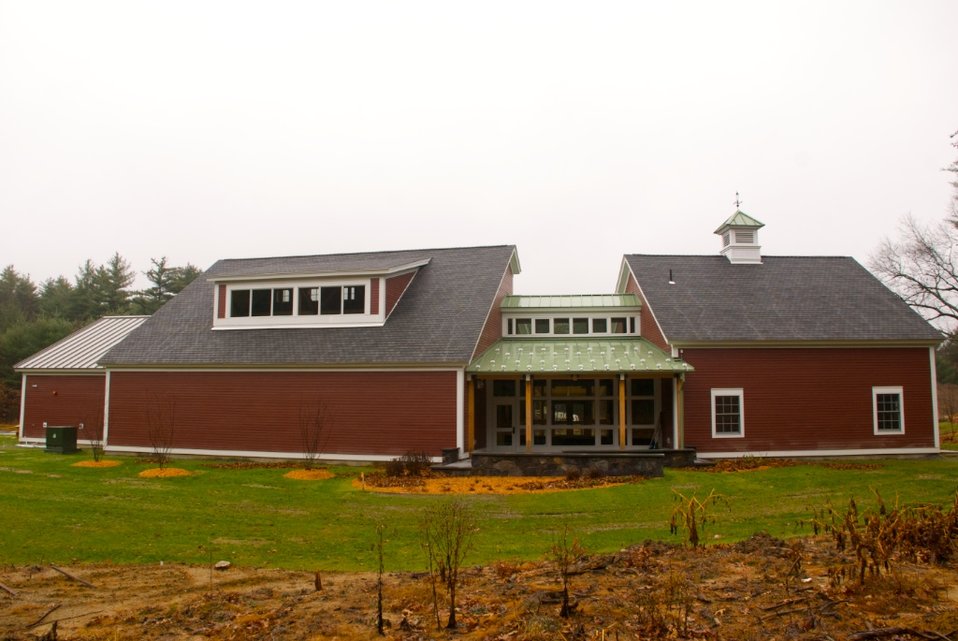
Assabet River NWR Visitor Center

In 2010, the U.S. Fish and Wildlife Service will open the doors to a new energy efficient administrative and visitor center for the Eastern Massachusetts National Wildlife Refuge Complex at the Assabet River refuge in Sudbury, Mass.

American Recovery and Reinvestment Act funding will support the fabrication and installation of exhibits that will enhance visitors' experience with information about the refuge's wildlife, habitats, and recreational opportunities.